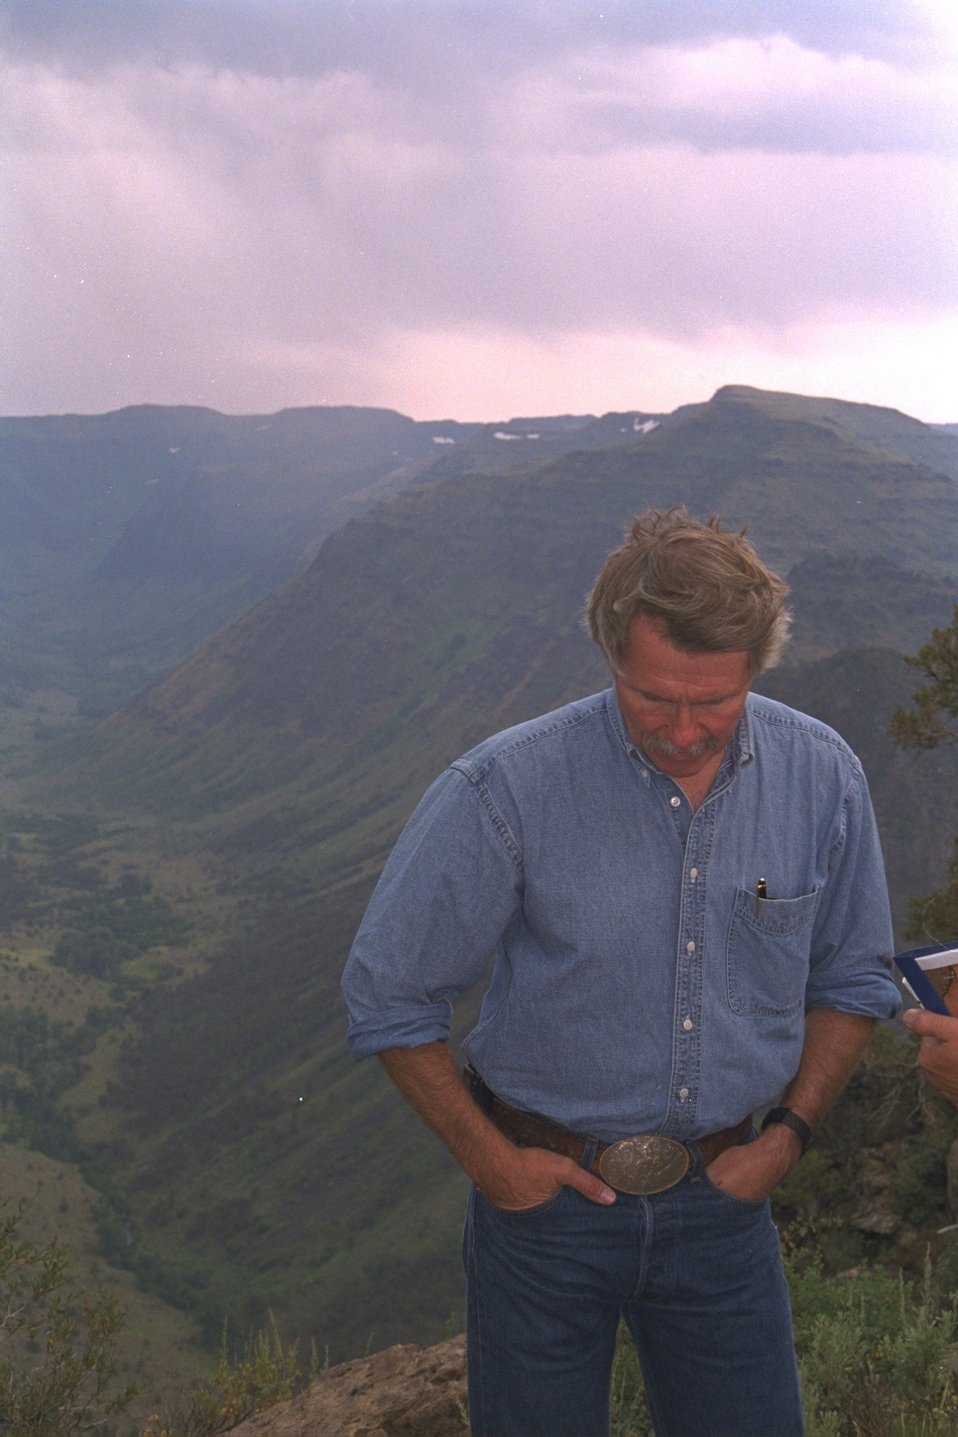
Oregon Governor John kitzhaver at Big Indian Gorge on Steens Mountain.